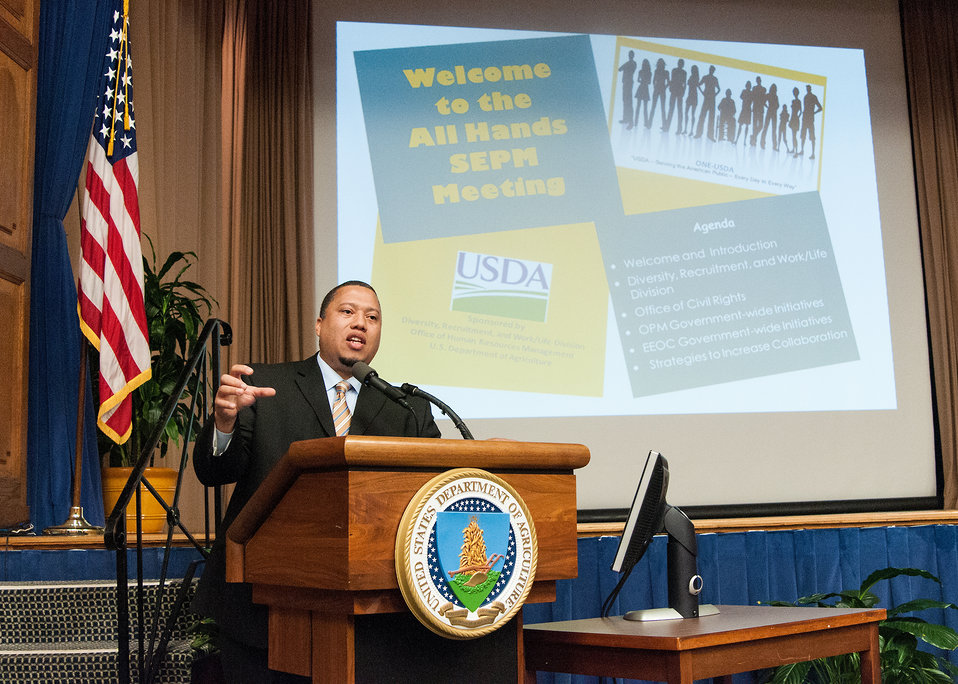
U.S. Equal Employment Opportunity Commission (EEOC) Office of Federal Operations Federal Sector Programs Directo Dexter Brooks speaks EEOC Government Wide Initiatives at the First Annual All Hands Special Emphasis Program Managers (SEPM) Meeting at the U.S. Department of Agriculture Jefferson Auditorium in Washington, D.C. on Wednesday, Mar. 13, 2013.